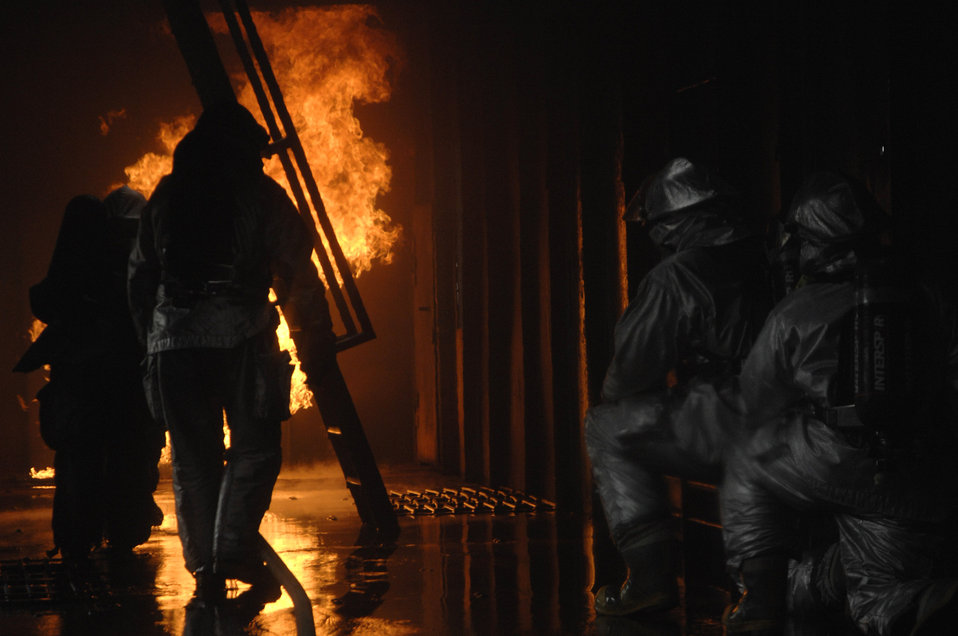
Battling the heat

48th Civil Engineer Squadron firefighters advance a hose line toward a simulated cargo fire while another crew backs them up for safety inside an aircraft fire trainer March 8 at Royal Air Force Mildenhall, England. Firefighters must train constantly to stay proficient in their aircraft rescue and firefighting skills.